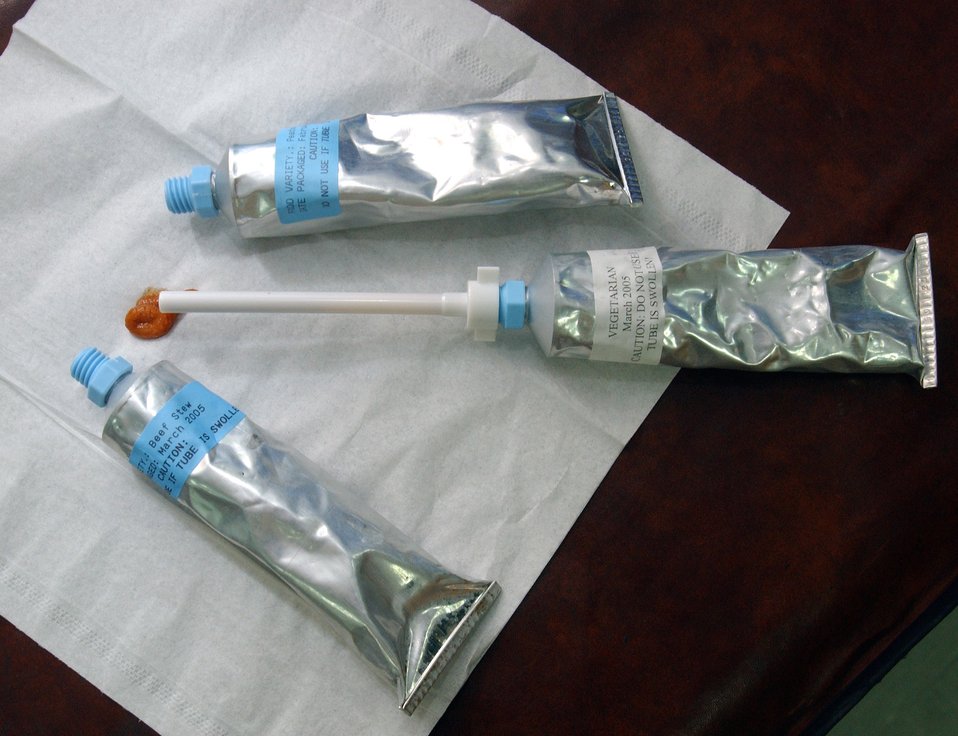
U-2 operations